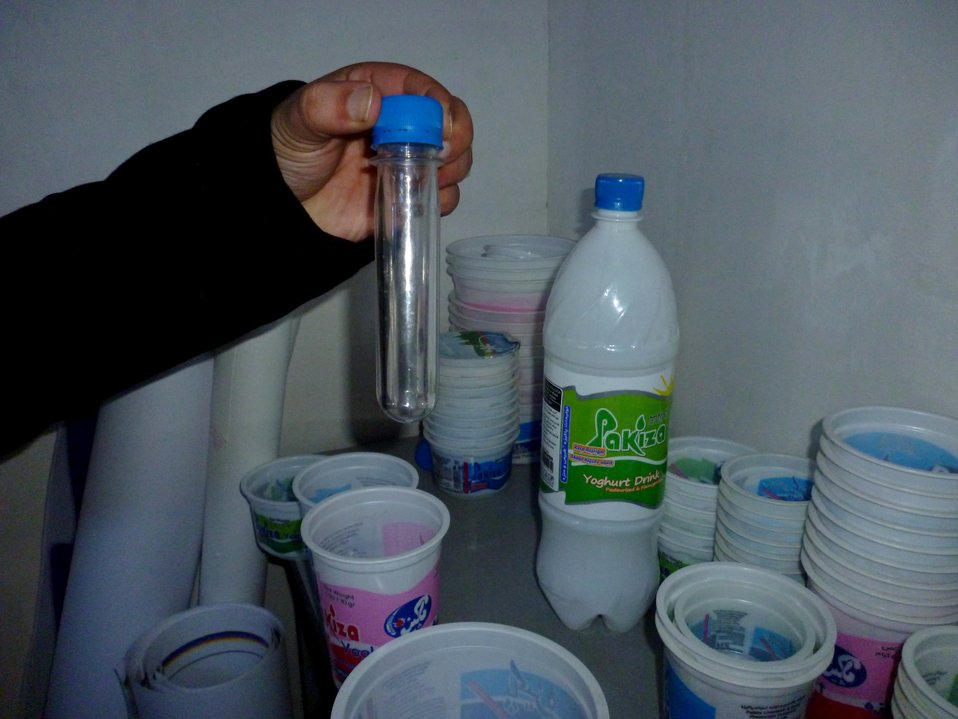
At a dairy processing plant in Mazar, the owner proudly explains that the tiny plastic bottle in his hand will be expanded to the size of the bottle on the right with his new bottling machine. Other yogurt cups are displayed in various sizes. The proces